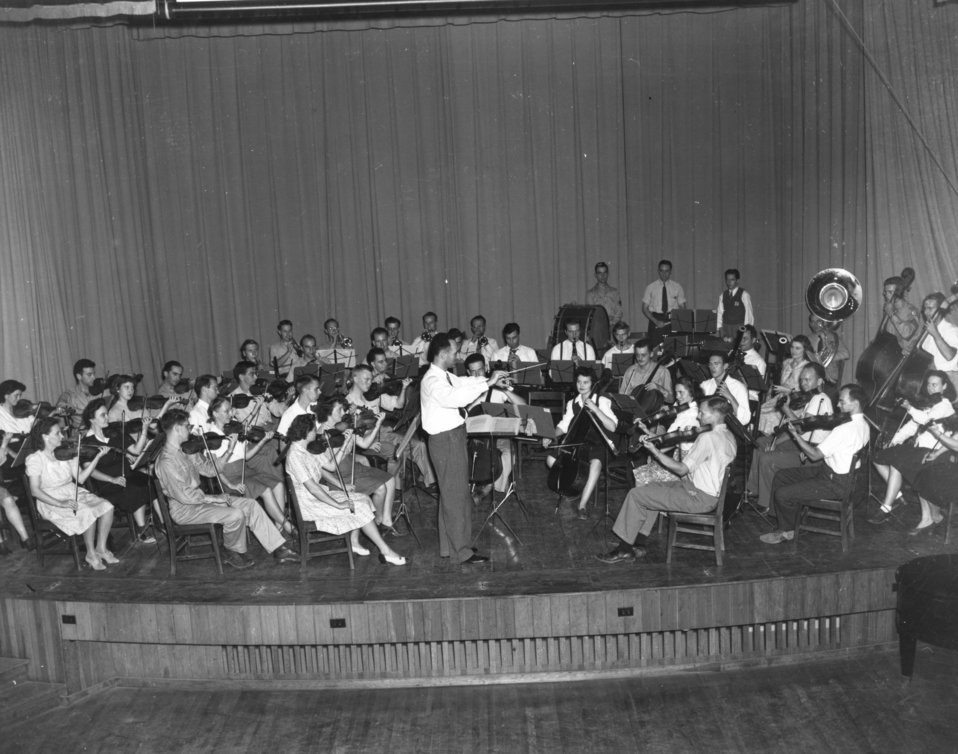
Recreation at Oak Ridge